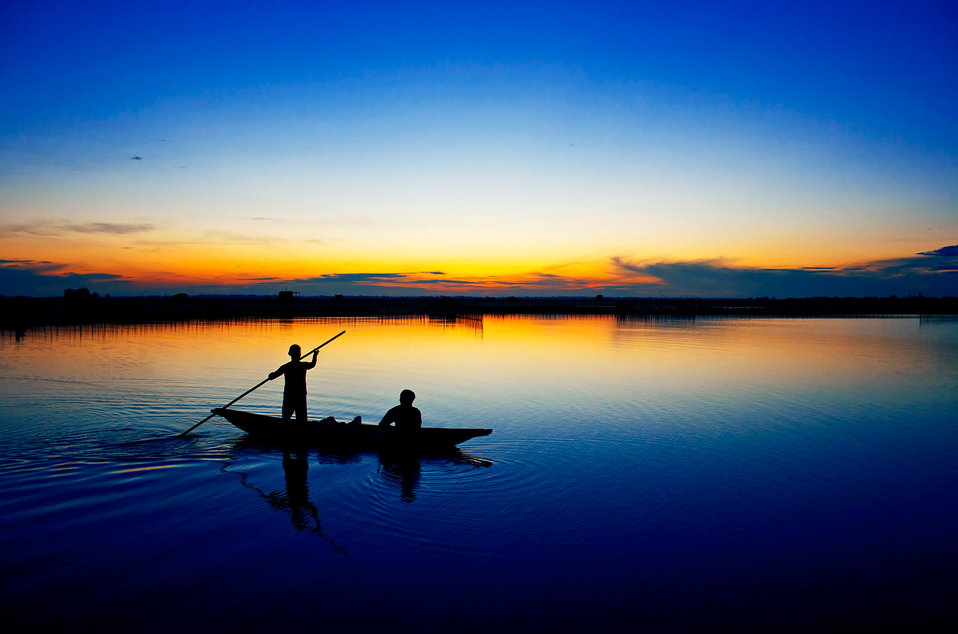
Working in dawn

A couple of fishermen are fishing in a lagoon in hue province, vietnam..